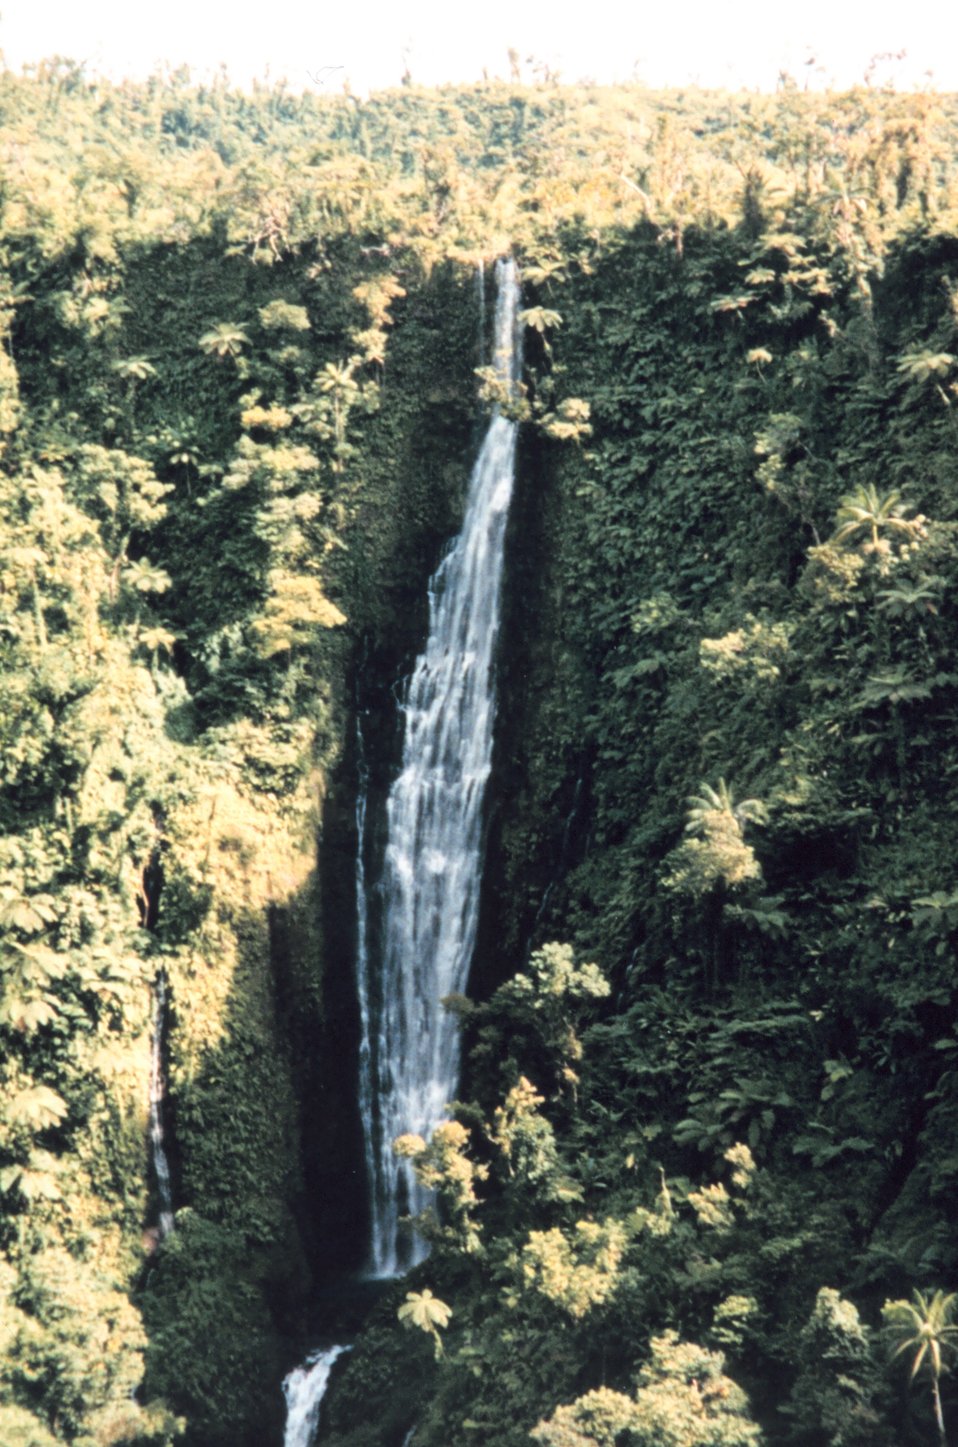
Tropical waterfall in Western Samoa not far from Robert Louis Stevenson home.